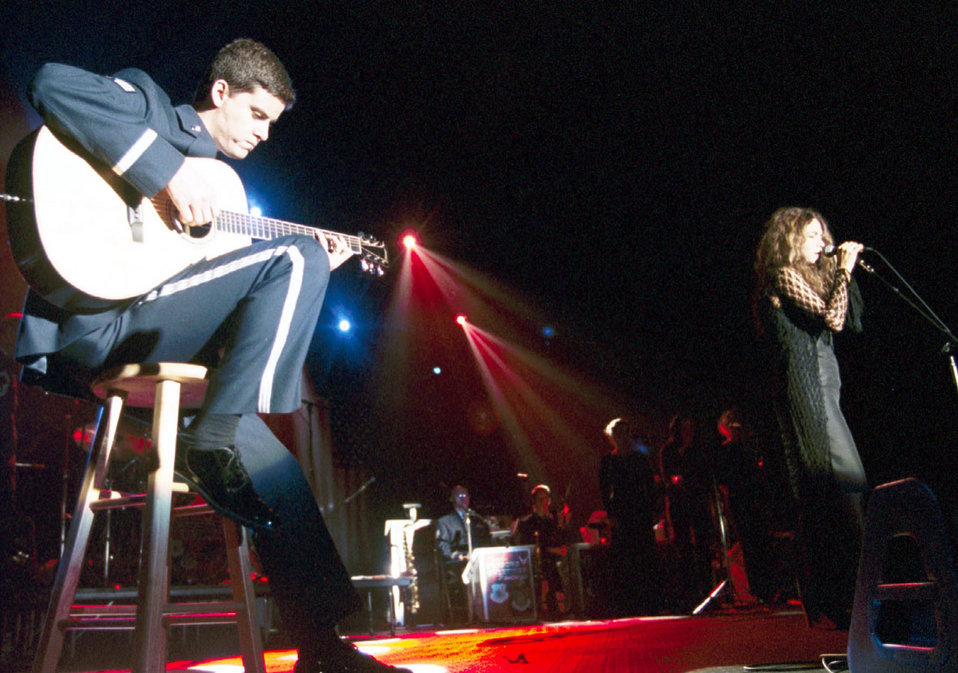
Guitar man

YOKOTA AIR BASE, Japan -- Senior Airman Chris Hare from the Air Force Reserve Band plays the guitar while recording artist Lisa Angelle sings during a concert here. The Yokota Air Base community kicked up their heels and hit the dance floor during a night of fabulous music at Hangar 15 during Operation Seasons Greetings. Operation Seasons Greetings 2000 is a Bob Hope/USO themed entertainment package focused on the troops during the Thanksgiving holiday. A two-hour television show will be edited into a 30-minute special and will be sent to the Air Force Broadcasting Service to get multiple airings on AFN channels worldwide.